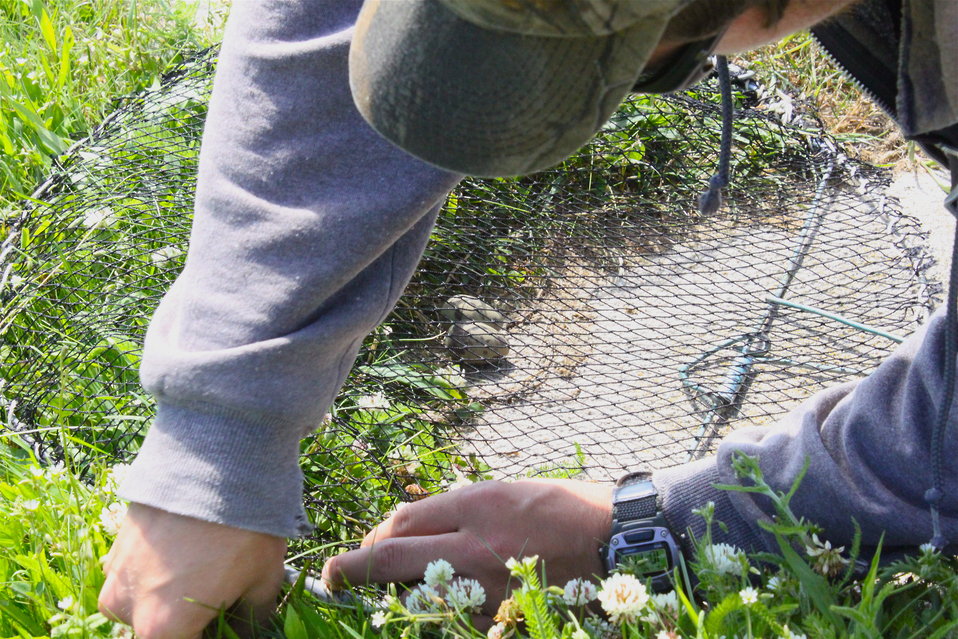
Setting Tern Traps